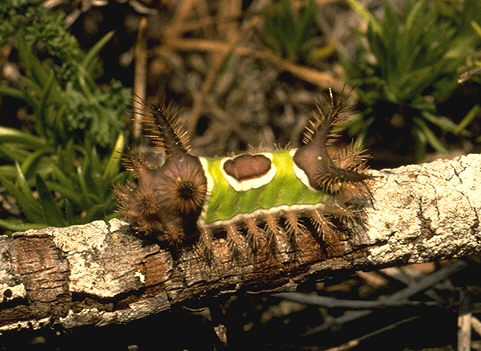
Saddleback caterpillar observed in late summer, Atlanta, Georgia.